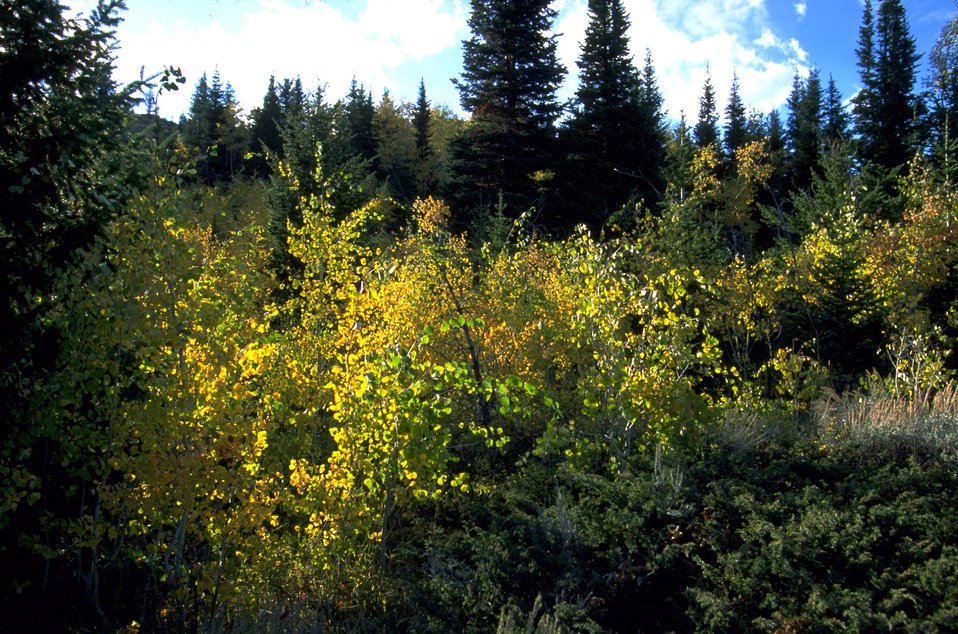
Fall Foliage in the Axolotl Lakes Wilderness Study Area